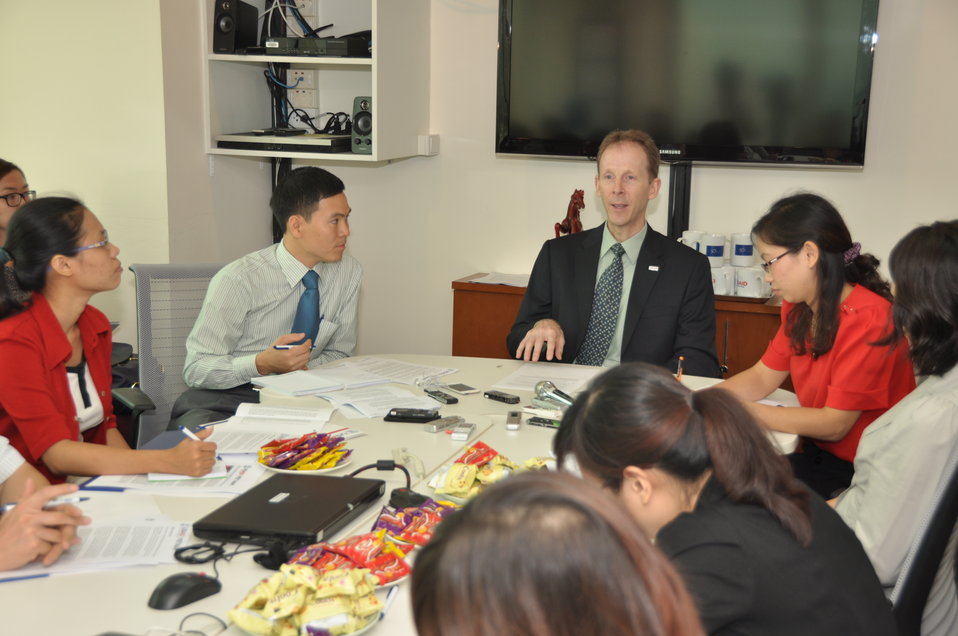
USAID Mission Director Joakim Parker announces climate change awards

October 17, 2012